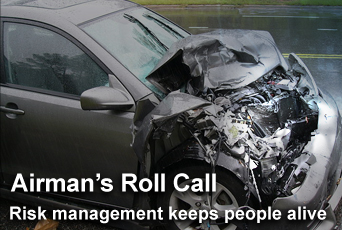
Airman's Roll Call: Risk management

This week's Airman's Roll Call offers Airmen a tool they can use to ensure themselves and their families have a safe and enjoyable.